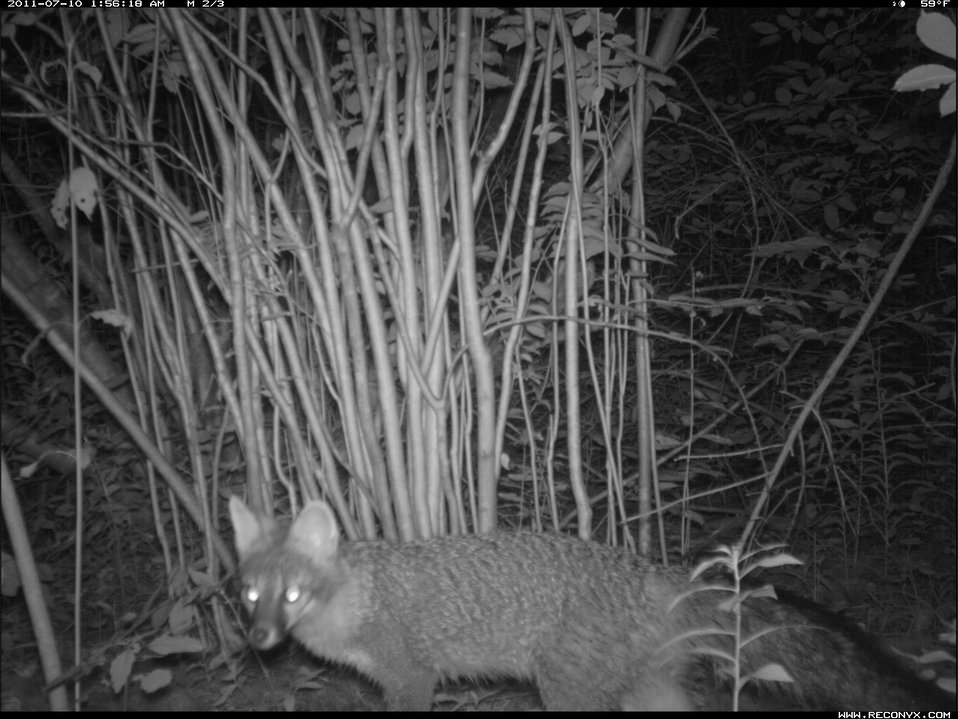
Grey Fox